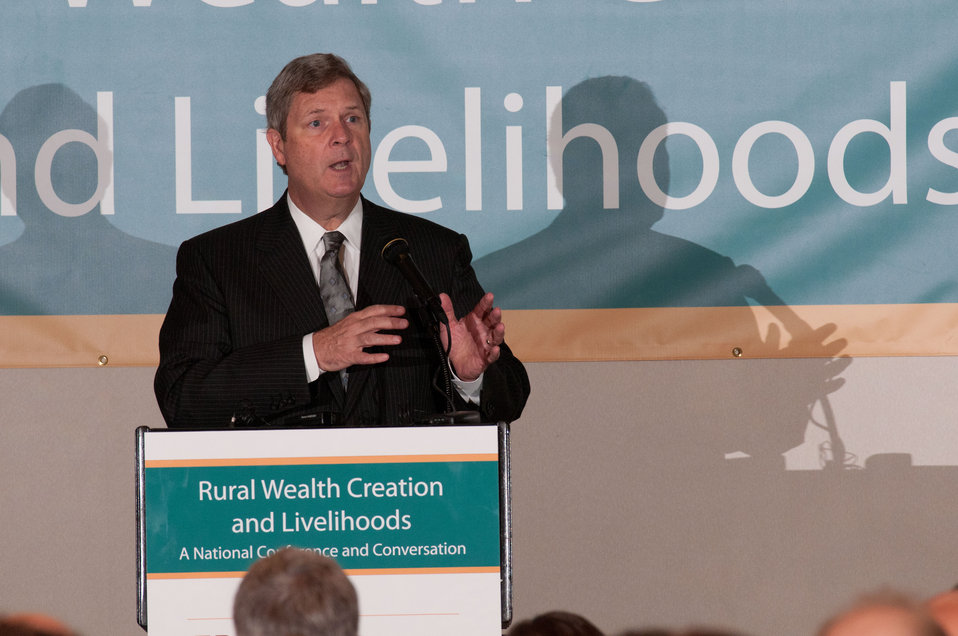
U.S. Department of Agriculture (USDA) Secretary Tom Vilsack was the keynote speaker for the Rural Wealth Creation and Livelihoods national conference for practitioners, researchers and policymakers, held at the Dupont Hotel, Washington DC, on Monday October 3, 2011. USDA partnered with the Ford Foundation to sponsor the conference.